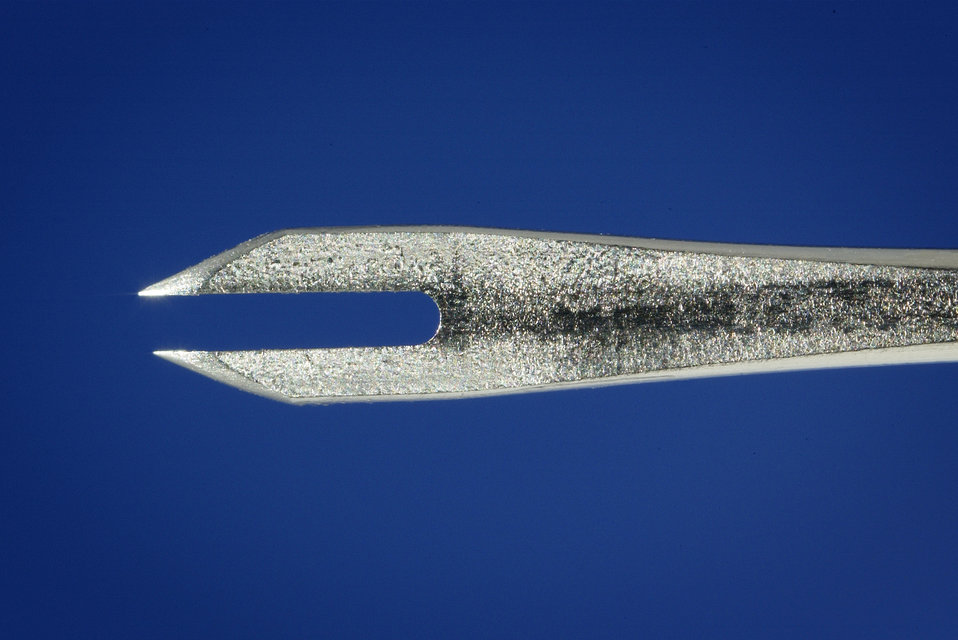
A close-up of the tip of a bifurcated needle used to vaccinate individuals with the smallpox vaccine.